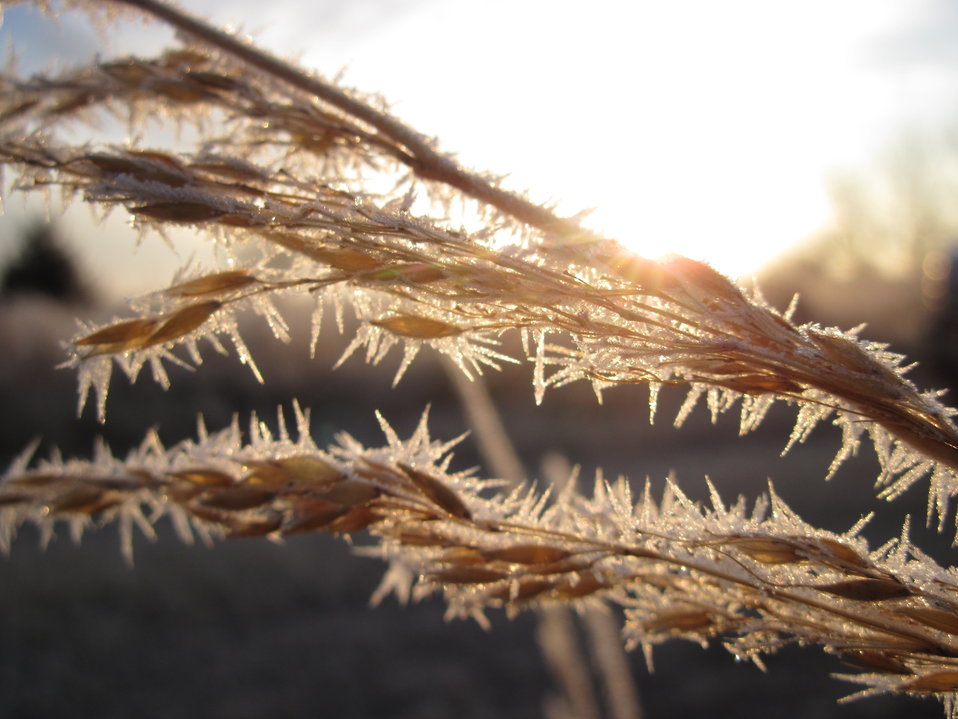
Frost on Indiangrass

Indiangrass (Sorghastrum nutans) is one of the most common and widespread of the native, warm-season grasses in Quivira National Wildlife Refuge's sand prairies.